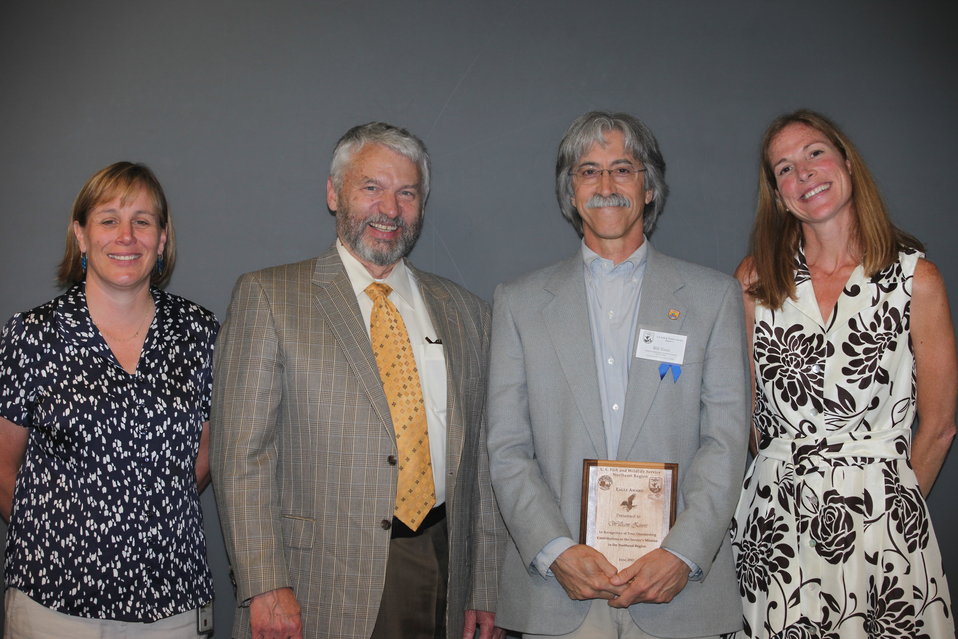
Bill Zinni, Realty, recieved an Eagle Award.
From left to right: Deputy Regional Director Deb Rocque, Deputy Director Rowan Gould, TinaMarie and Regional Director Wendi Weber